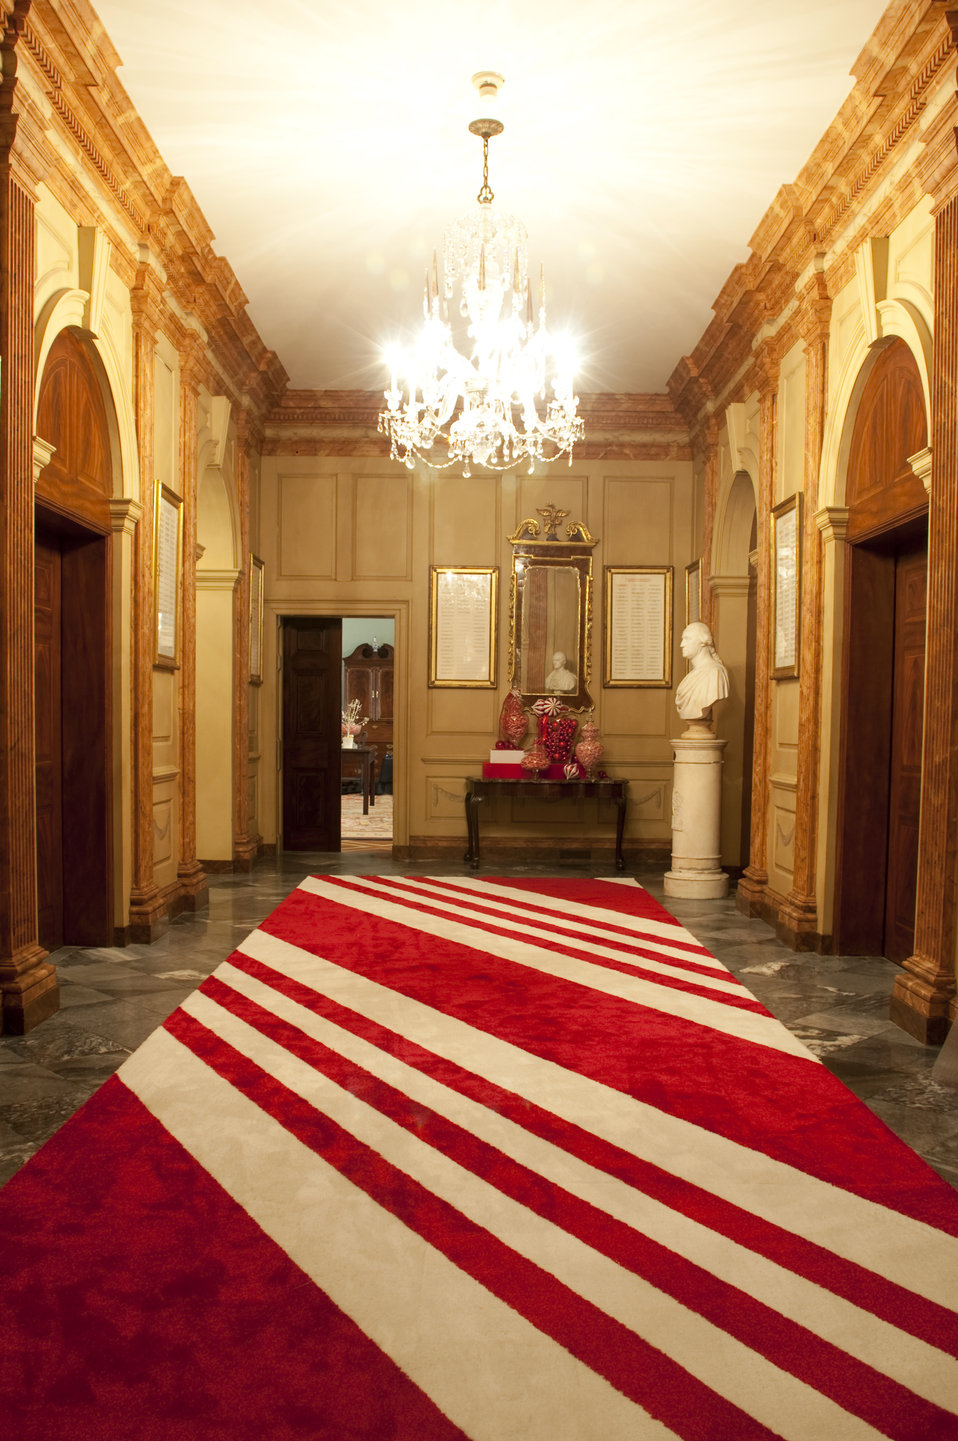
The U.S. Department of State Partners With Time Inc. and InStyle To Decorate the John Quincy Adams State Drawing Room

The U.S. Department of State partners with Time Inc. and InStyle to decorate the Diplomatic Reception Rooms for the Holidays in December 2010. Pictured in this photo is the John Quincy Adams State Drawing Room.